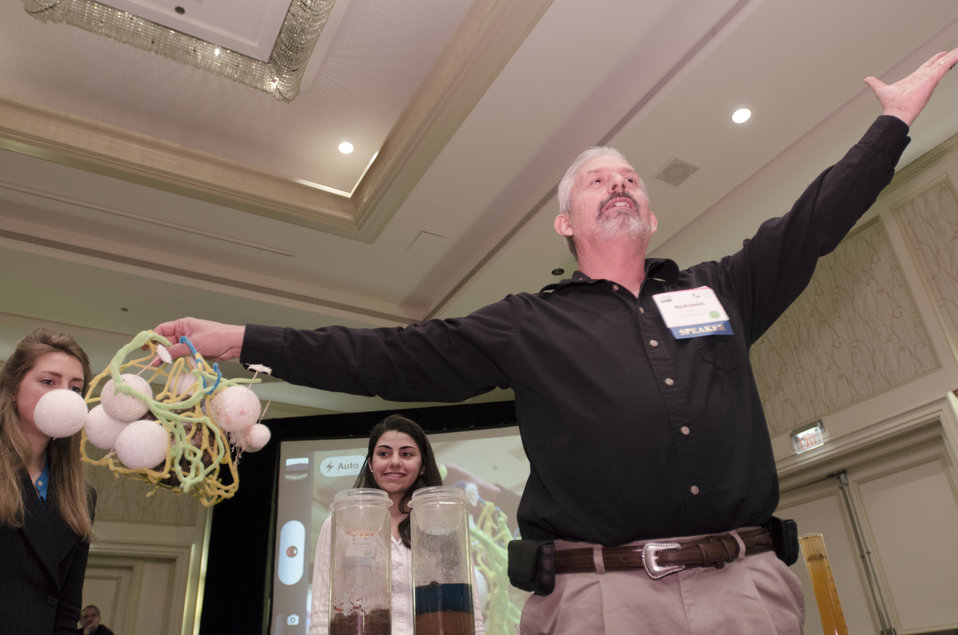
The U.S. Department of Agriculture (USDA) Natural Resources Conservation Service National Soil Health and Sustainability Team Agronomist Ray Archuleta demonstrate the usually unseen and misunderstood differences between healthy soil and how soils can become unhealthy, during the 2013 Agricultural Outlook Forum held at the Crystal Gateway Marriott Hotel in Arlington, VA on Friday, Feb. 22, 2013. Mr Archuleta is a champion for understanding soil health as the foundation for farming sustainably in the 21st century: reducing chemical inputs; creating sustainable farming; improving water holding capacity; improving the farmer’s bottom line; and feeding an increasing global population. The breakout session on Reducing Risks by Improving Soil Health examined the indicators of soil health, to reduce chemical inputs and apply the right techniques for sustainable production and other benefits. Soil health is defined as the capacity of the soil to function as a living ecosystem that sustains plant, animal, and human health with limited human intervention.